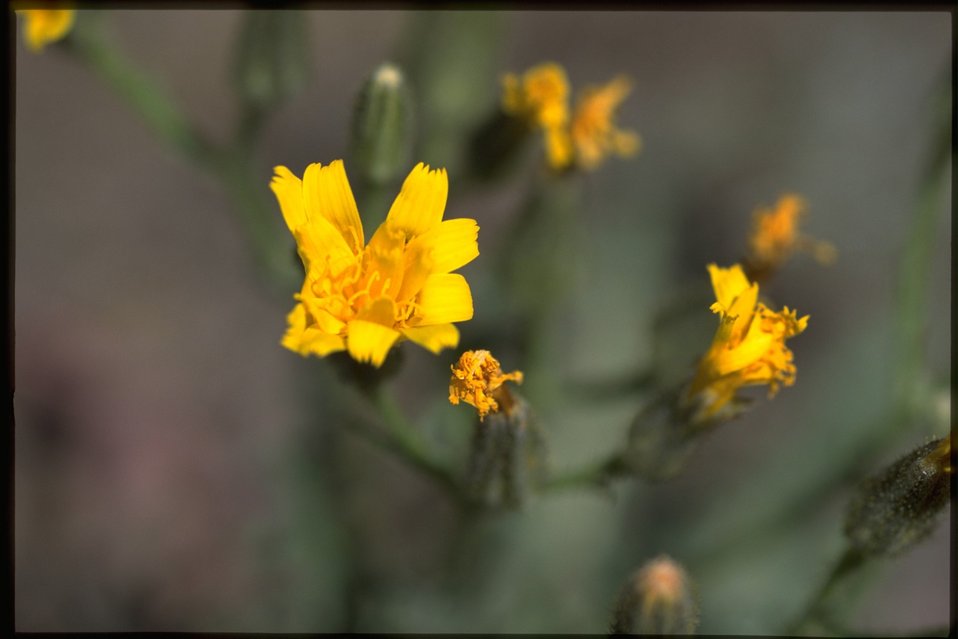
Closeup shot of Crepis.